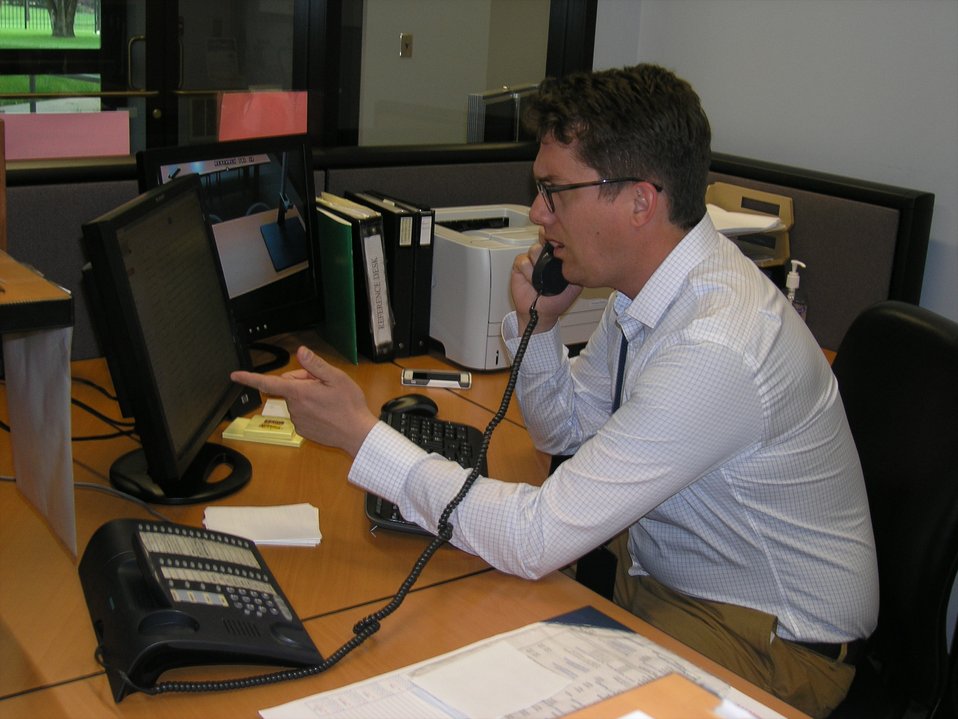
Jeremy Farmer explaining the research room process to a caller; Location: National Archives at Chicago, Chicago, IL